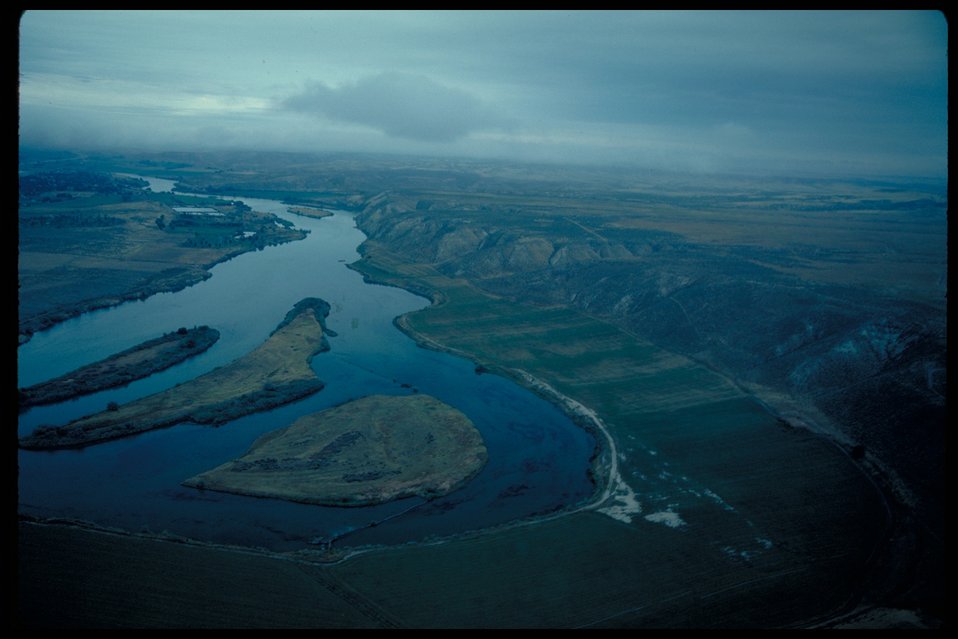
Three Island Crossing Oregon Trail Lower Snake River District